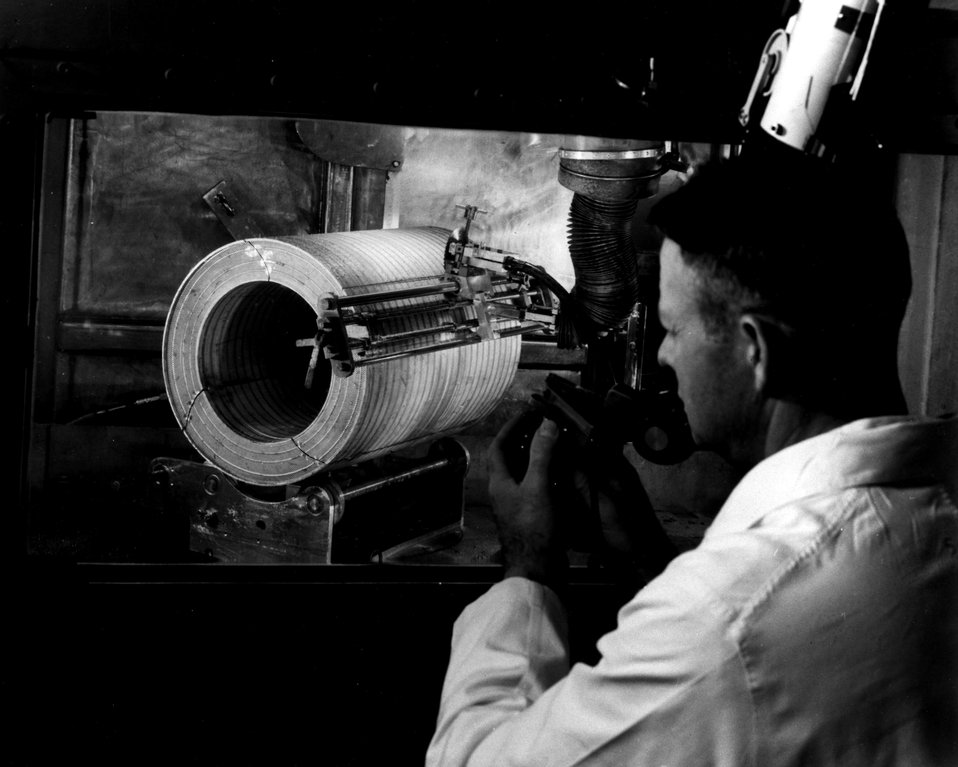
High Flux Isotope Reactor fuel unit after depletion in the reactor. This unit is being examined at the High Radiation Level Examination Laboratory for any radiation damage incurred during its use in the reactor. c. 1970